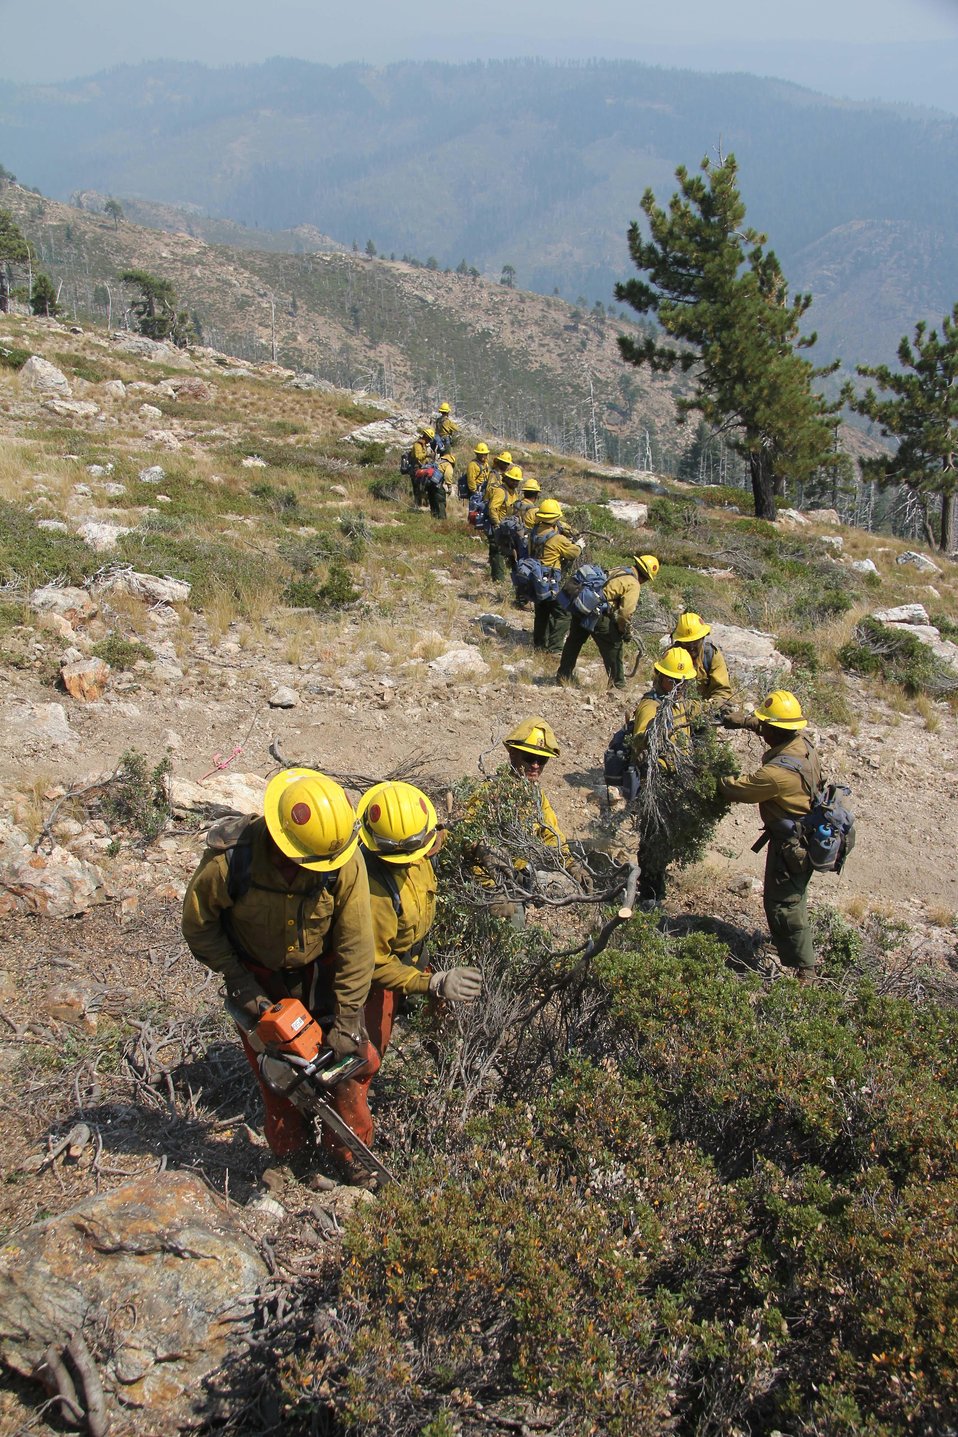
The Scorpion fire crew out of Sequoia National Forest removes brush and other fuels away from the Duncan Peak Lookout before planned burning operations at the American Fire. The American Fire in Tahoe National Forest near Foresthill, CA began on Aug. 10, 2013 is under investigation. The fire has consumed approximately 24,935 acres and is approximately 88% contained.